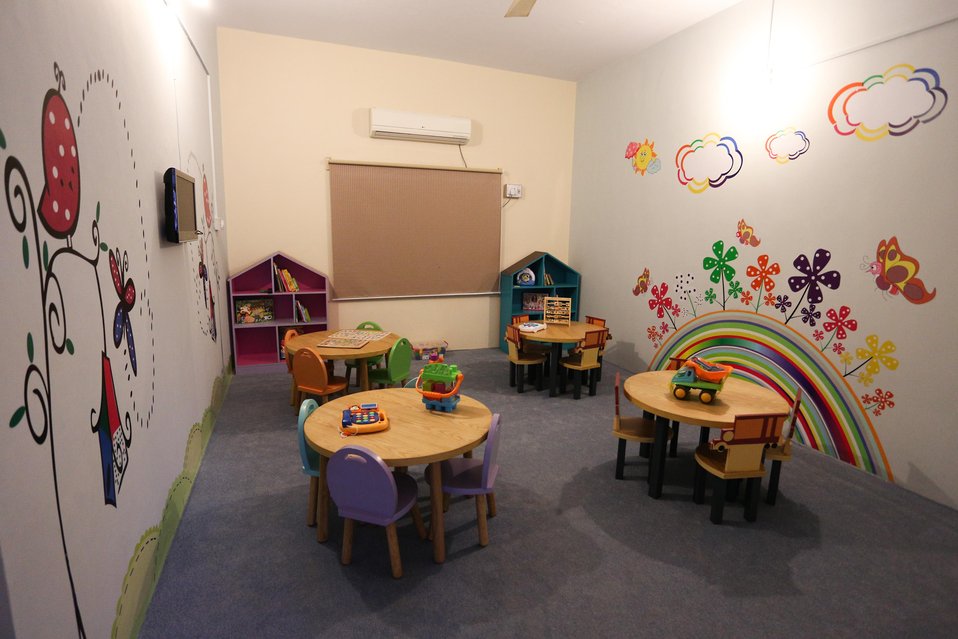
The United States Supports a Day Care Center at MEPCO

Inside view of the MEPCO daycare center.